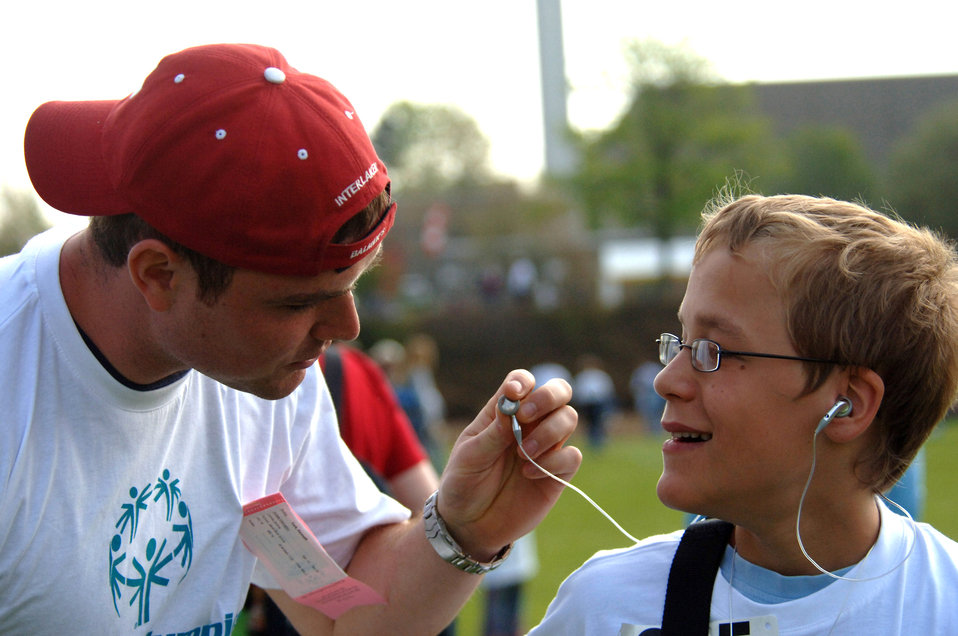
Volunteer spirit at Special Olympics

Senior Airman Kenneth York listens to the music on Maurice's headset before the start of the Special Olympics opening ceremonies at Enkenbach-Alsenborn, Germany, on Wednesday, May 3, 2006. This is the 29th time the games were held in this part of Germany. Volunteers usually outnumber the athletes. Airman York, from Knoxville, Tenn., is with the 435th Logistics Readiness Squadron at Ramstein Air Base, Germany.